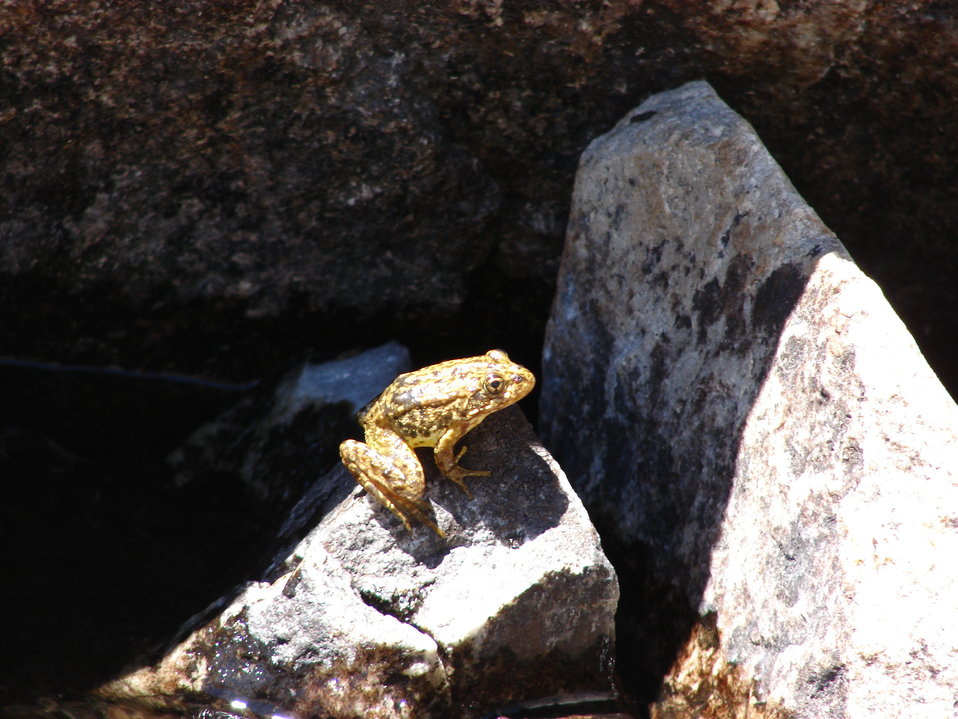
Mountain yellow-legged frog